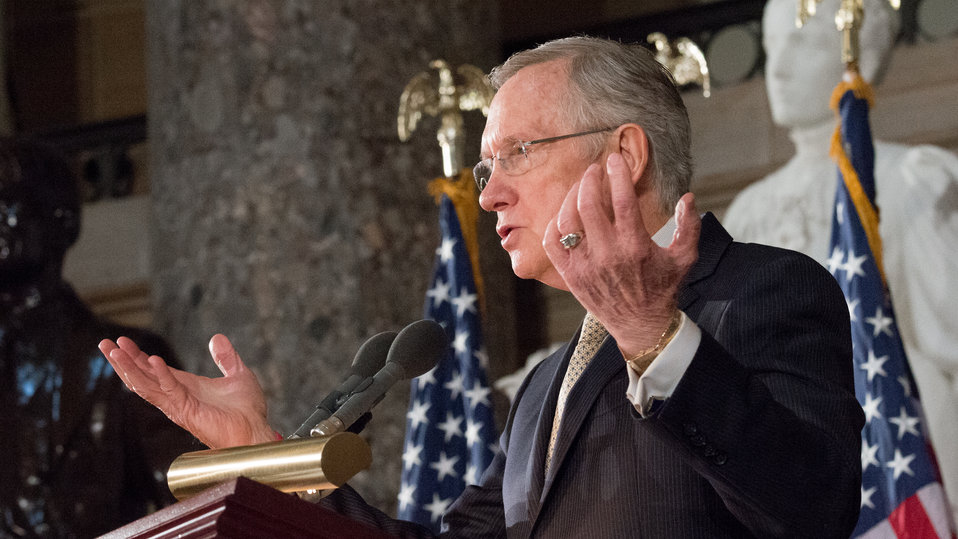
Majority Leader of the U.S. Senate Harry Reid speaks during the dedication of the Dr. Norman Borlaug statue in the National Statuary Hall at the U. S. Capitol in Washington, D.C. on Tuesday, Mar. 25, 2014. Today commemorates 100 years since Dr. Borlaug’s birth. Through his scientific and humanitarian achievements, Nobel Laureate Dr. Norman E. Borlaug (1914-2009) has been credited with saving millions of people from starvation in developing countries. His collaborative work with scientists in Mexico on a high-yielding, disease resistant dwarf wheat sparked the Green Revolution of the 1960s. The National Statuary Hall Collection in the U.S. Capitol is composed of statues donated by individual states to honor persons notable in their history.